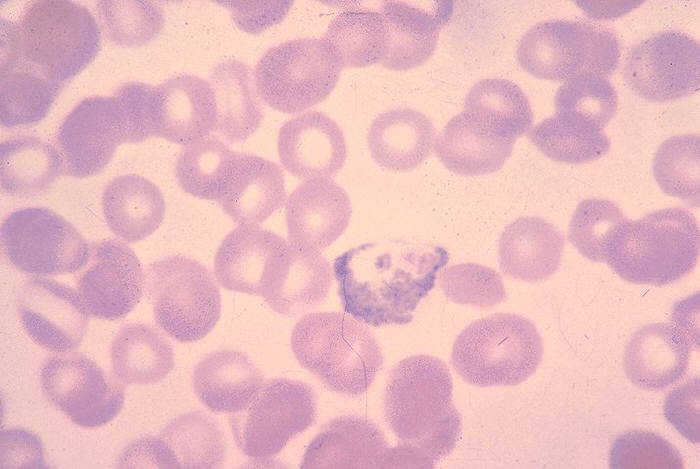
Plasmodium vivax mature macrogametocyte